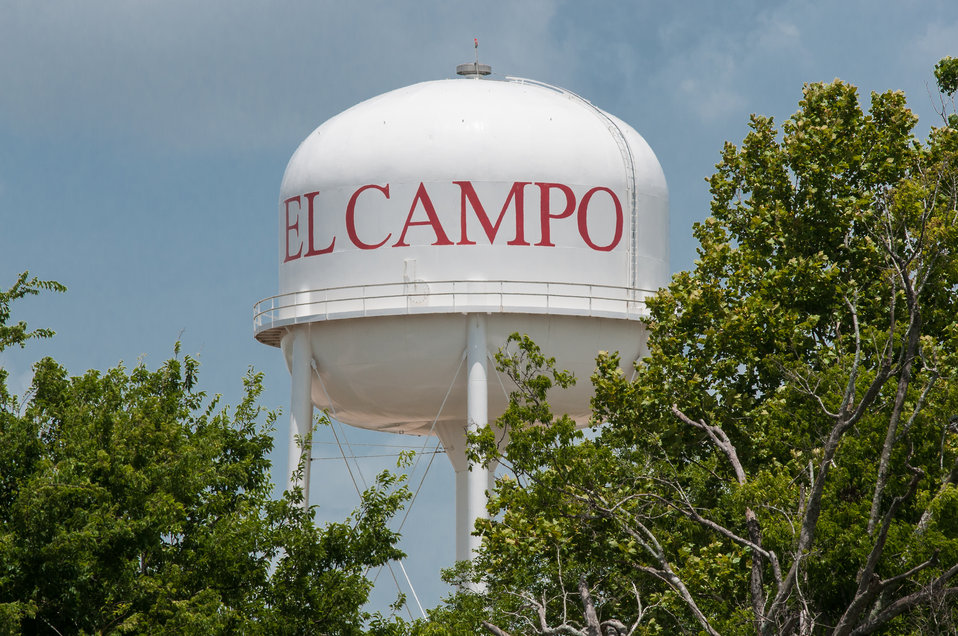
Water tower is visible through the trees in El Campo, TX on Jun. 20, 2013. El Campo is a farming community about an hour drive southwest from Houston, TX, which currently grows cotton, milo (grain sorghum), soybeans and rice.